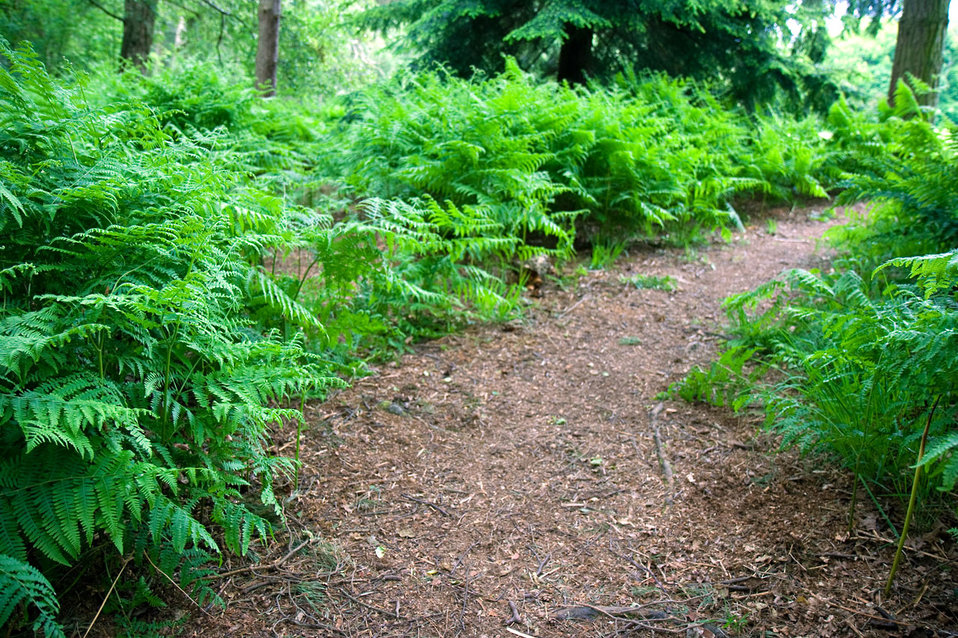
Path in the forest

A path in the forest after the rain.